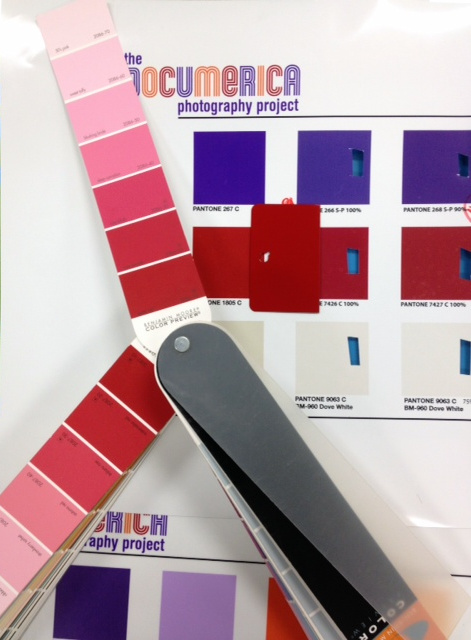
Documerica Graphic Colors

Designers from the Exhibits office matching graphic colors for the upcoming exhibit, 'Searching for the Seventies: The Documerica Photography Project'. Opening March 8